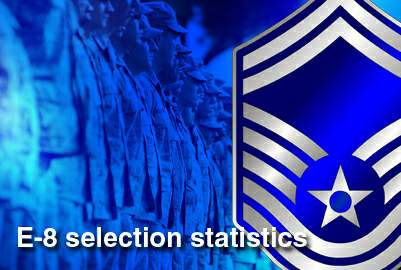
Air Force officials announce E-8 selection stats

Air Force officials selected 1,269 of 13,741 eligible master sergeants for promotion to senior master sergeant for a selection rate of 9.24 percent, and the list will be released publicly at 8 a.m. CST March 4, 2010. The average score for those selected was 665.85, with an average time in grade of 4.38 years and an average time in service of 20.2 years, respectively.